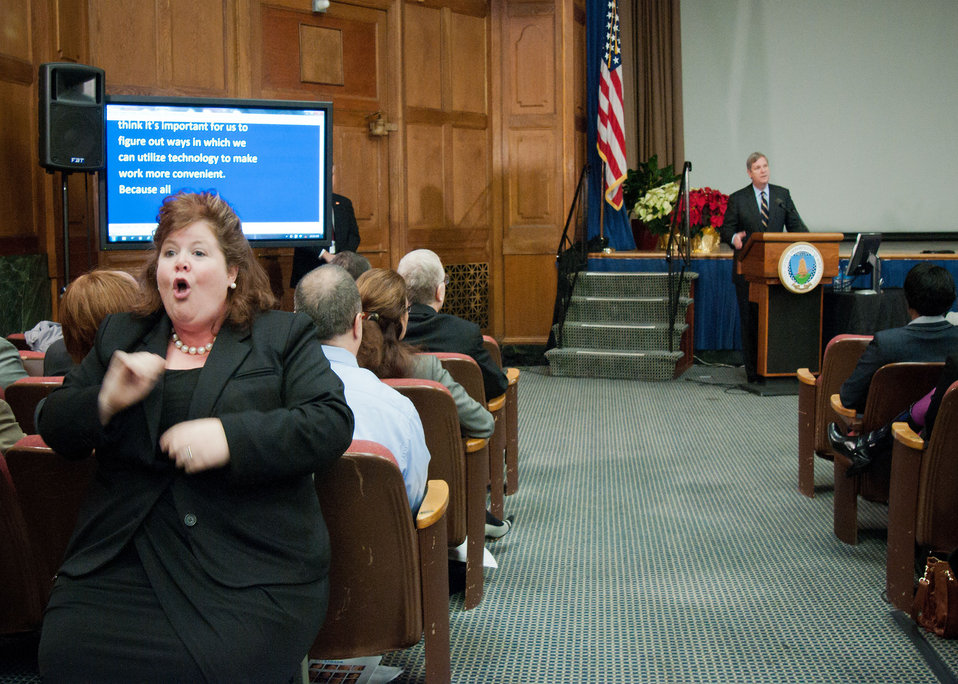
Agriculture Secretary Tom Vilsack addresses employees at the U.S. Department of Agriculture’s (USDA) Fourth Annual Cultural Transformation event held in Washington, D.C. on Tuesday, Dec. 4, 2012. The theme for the event “Faces of Cultural Transformation” Focusing on changing the way we serve our customers and cultural transformation’s benefits to employees. Secretary Vilsack spoke of the progress made during his administration’s tenure at the department and how USDA is cited as a positive example of cultural transformation in the workplace.